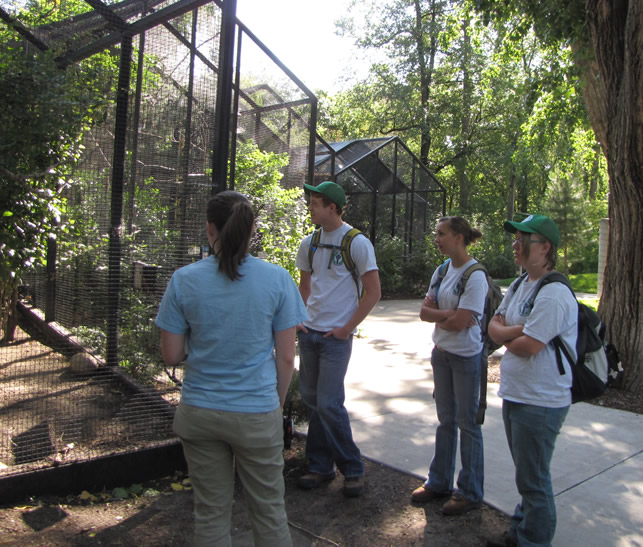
Trip to Tracy Aviary

Youth Conservation Corps crew took a trip to the Tracy Aviary where the crew planted wetland plants at the teaching stream and went on an educational tour of the aviary learning about the species survival program (SSP), reasons for extinction, and the importance of environmental education.